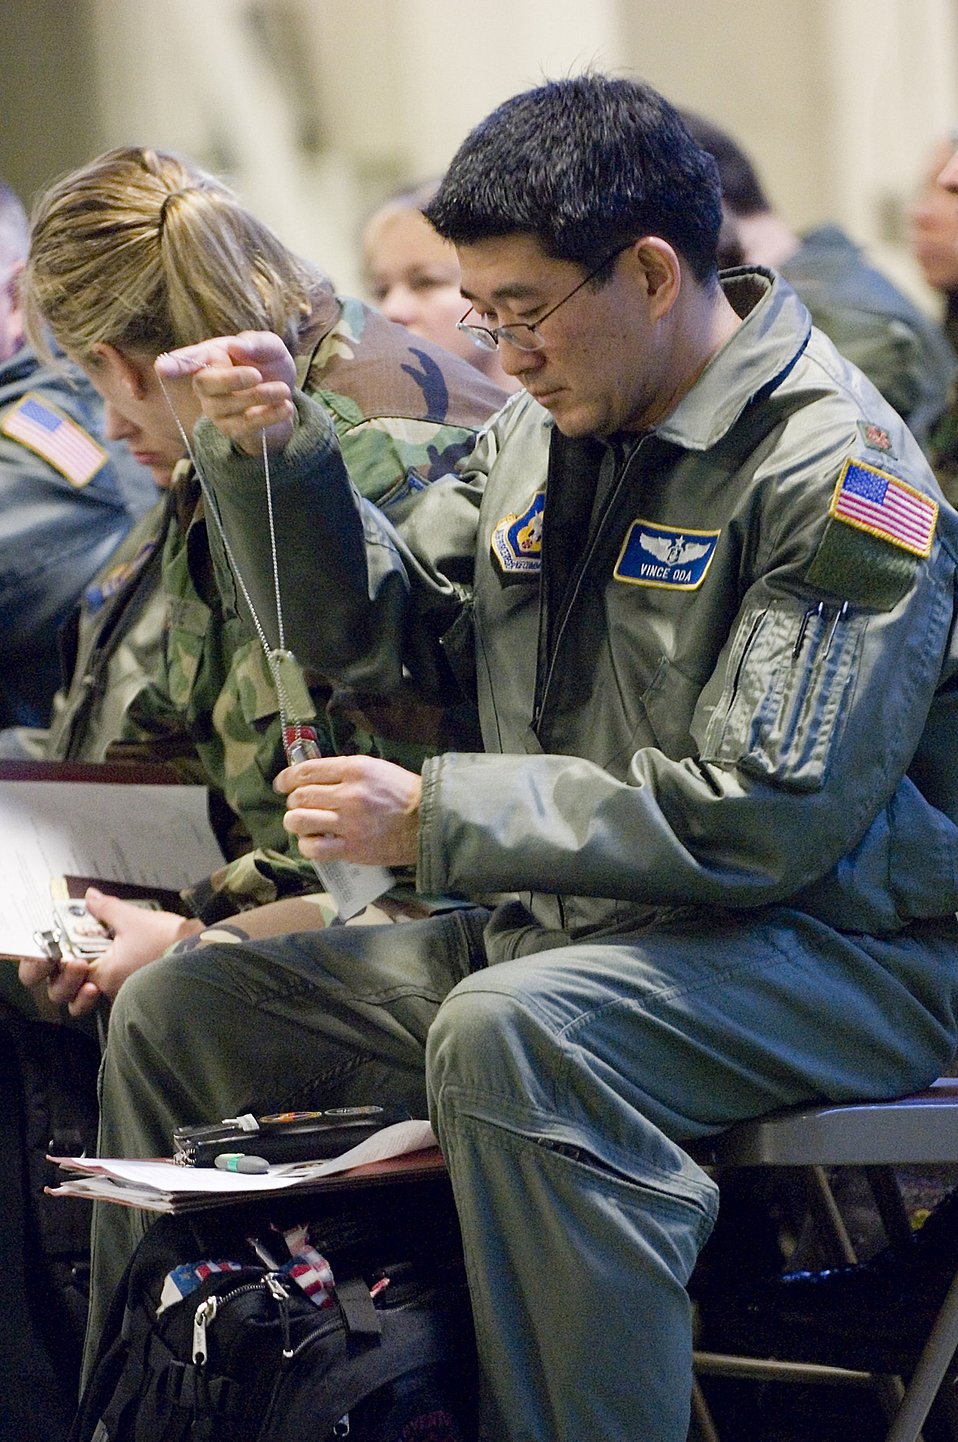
McChord Airmen provide lifeline in Pacific

Maj. Vincent Oda pulls out his dog tags Jan. 25 at the deployment processing center at McChord Air Force Base, Wash. Major Oda and 140 other reservists from the 446th Airlift Wing are participating in the Pacific Lifeline exercise in Hawaii Jan. 26 through Feb. 9. Pacific Lifeline is a total force exercise designed to exercise the military's ability to rapidly deploy a trained, equipped team anywhere in the Pacific in response to a humanitarian assistance or disaster scenario. Major Oda is assigned to the 446th Aeromedical Evacuation Squadron.